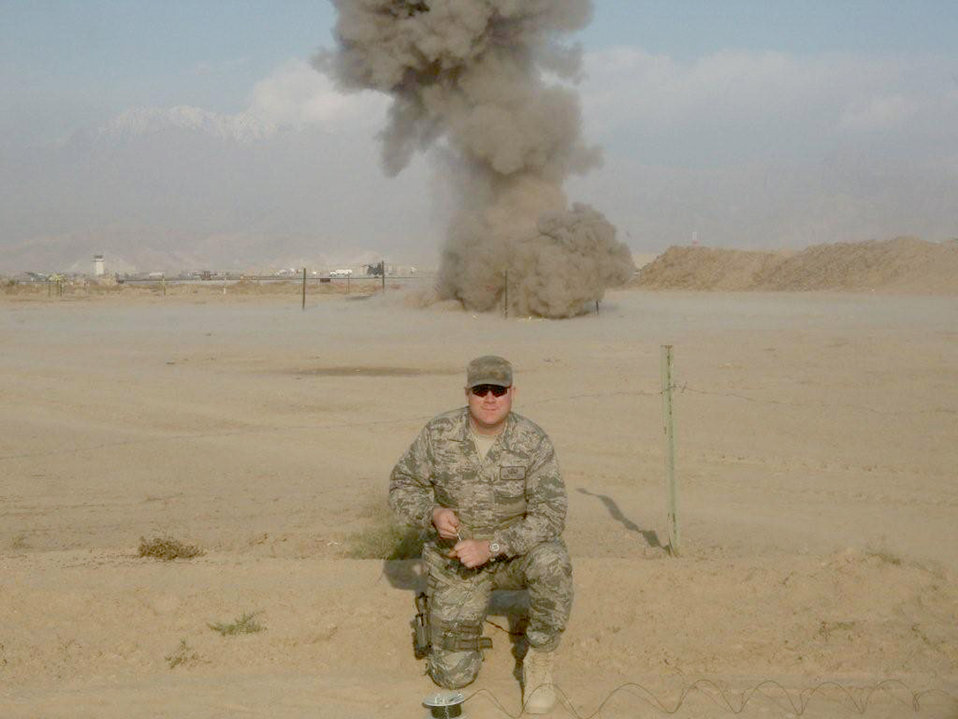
Blast radius: An EOD Airman's experience

Tech. Sgt. Rory Stark, 35th Civil Engineer Squadron explosive ordnance disposal technician, kneels in front of a blast field while destroying landmines at Bagram Airfield, Afghanistan, during his last deployment. Sergeant Stark is an explosive ordnance disposal technician assigned to the 35th Civil Engineer Squadron.